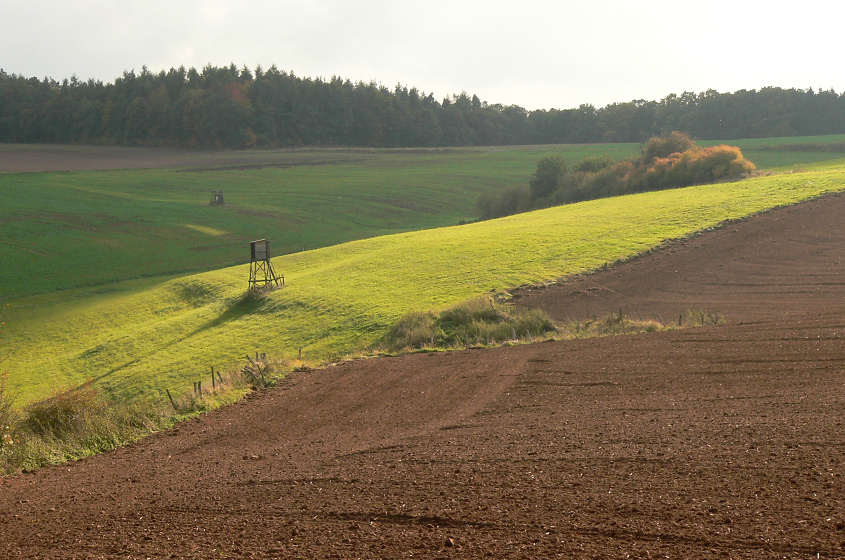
Deutsch: Landschaft bei Bad Wildungen